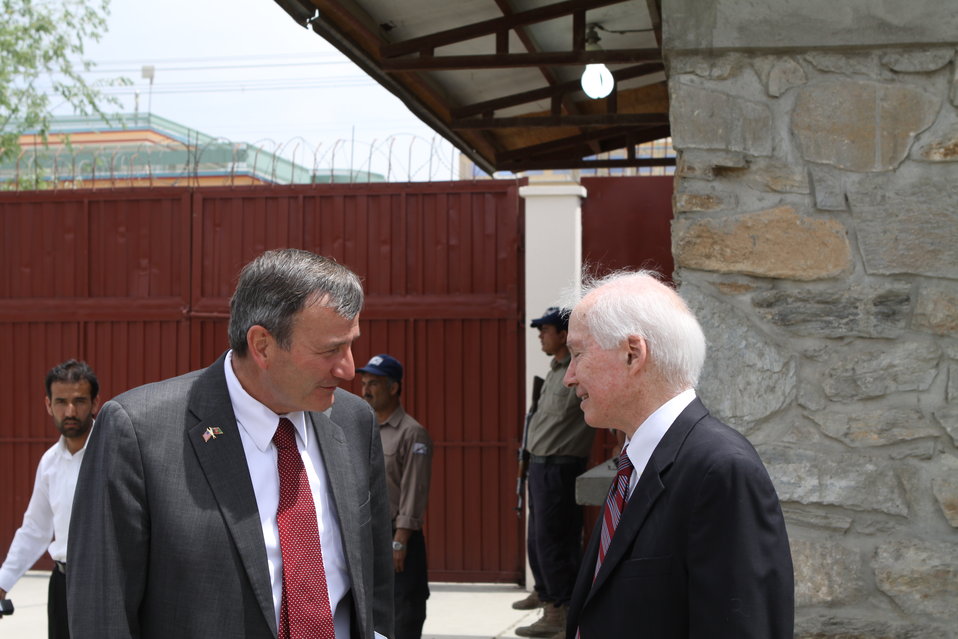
100526 AUAF Graduation 010